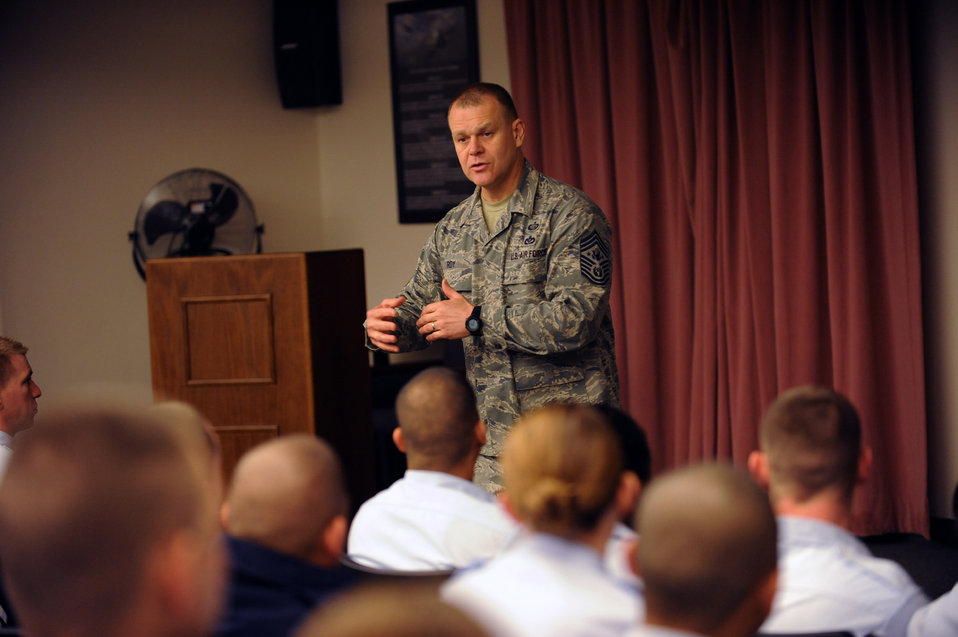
Chief Master Sgt. of the Air Force visits Nellis Air Force Base

NELLIS AIR FORCE BASE, Nev. -- Chief Master Sgt. of the Air Force James A. Roy discusses current Air Force events with Airman Leadership School students Jan. 22, 2010, at Nellis Air Force Base, Nev.